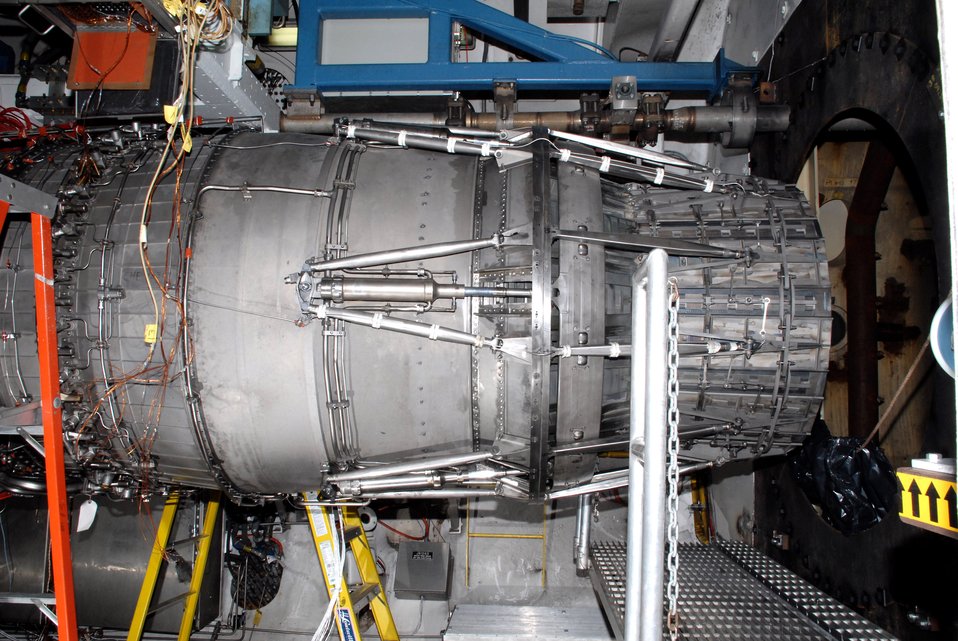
Secretary sees first afterburning engine test with synthetic fuel

The General Electric F101 engine is currently being tested for running on a 50-50 blend of Fisher-Tropsch synthetic fuel and JP-8 fuel at Arnold Engineering Development Center, Arnold Air Force Base, Tenn. The F101 engine powers the B-1B Lancer.